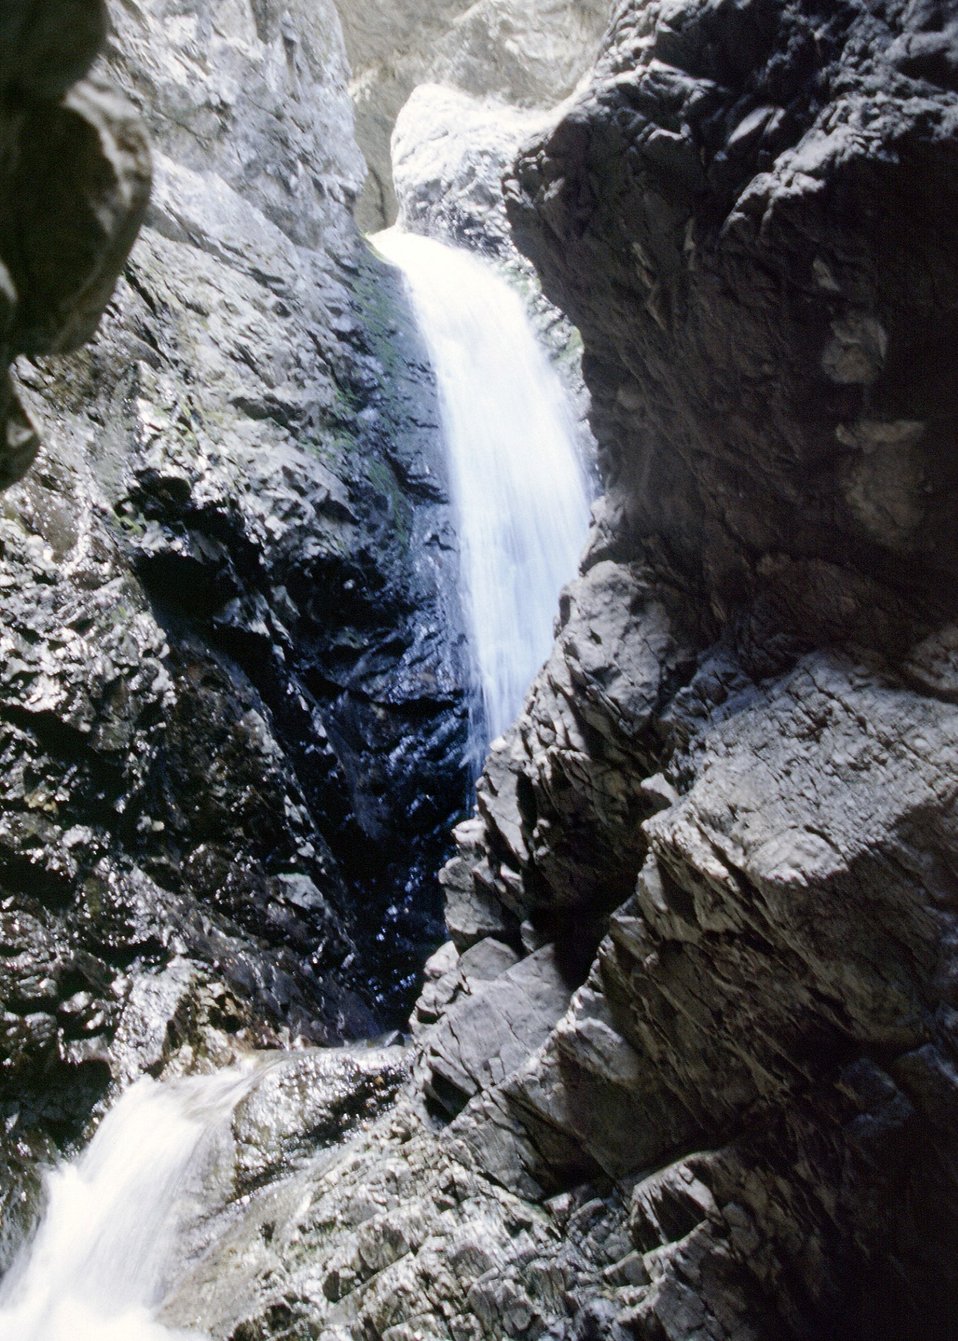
Water Falls